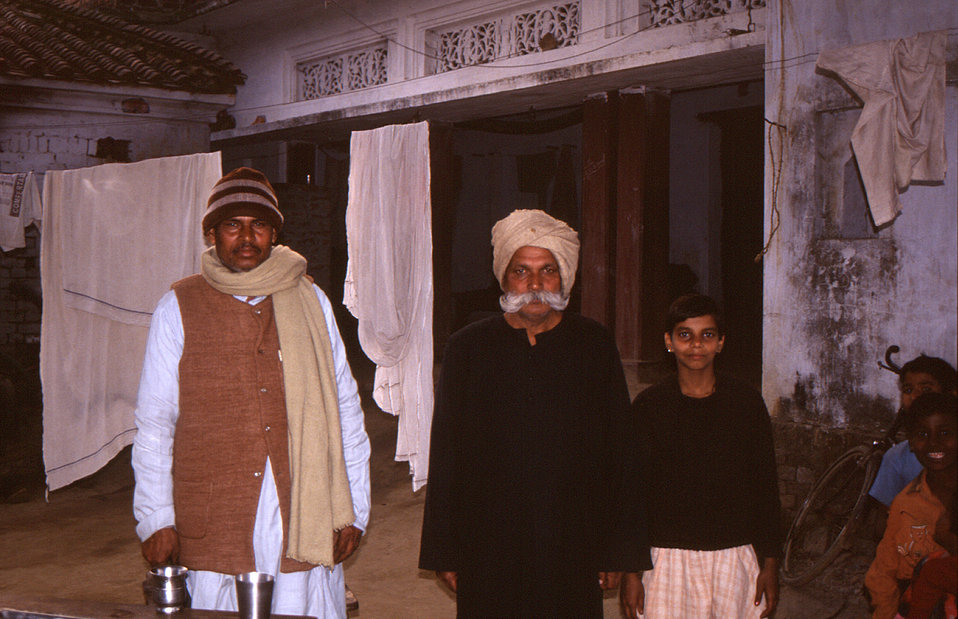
This 2000 photograph, provided by Chris Zahniser, B.S.N., R.N., M.P.H., depicted a teacher in a northern India village who had offered his hospitality to the Stop Transmission of Polio (STOP) team by insisting that the group stay for tea outside his house. Though his children were older than 5 years of age, he was encouraging others in his village to take the polio vaccine. At the time, Chris Zahniser was a Stop Transmission of Polio (STOP) team member and photographer, who was assigned to the state of Uttar Pradesh in northern India, and spent three months working in the Districts of Gorakhpur and Deoria.